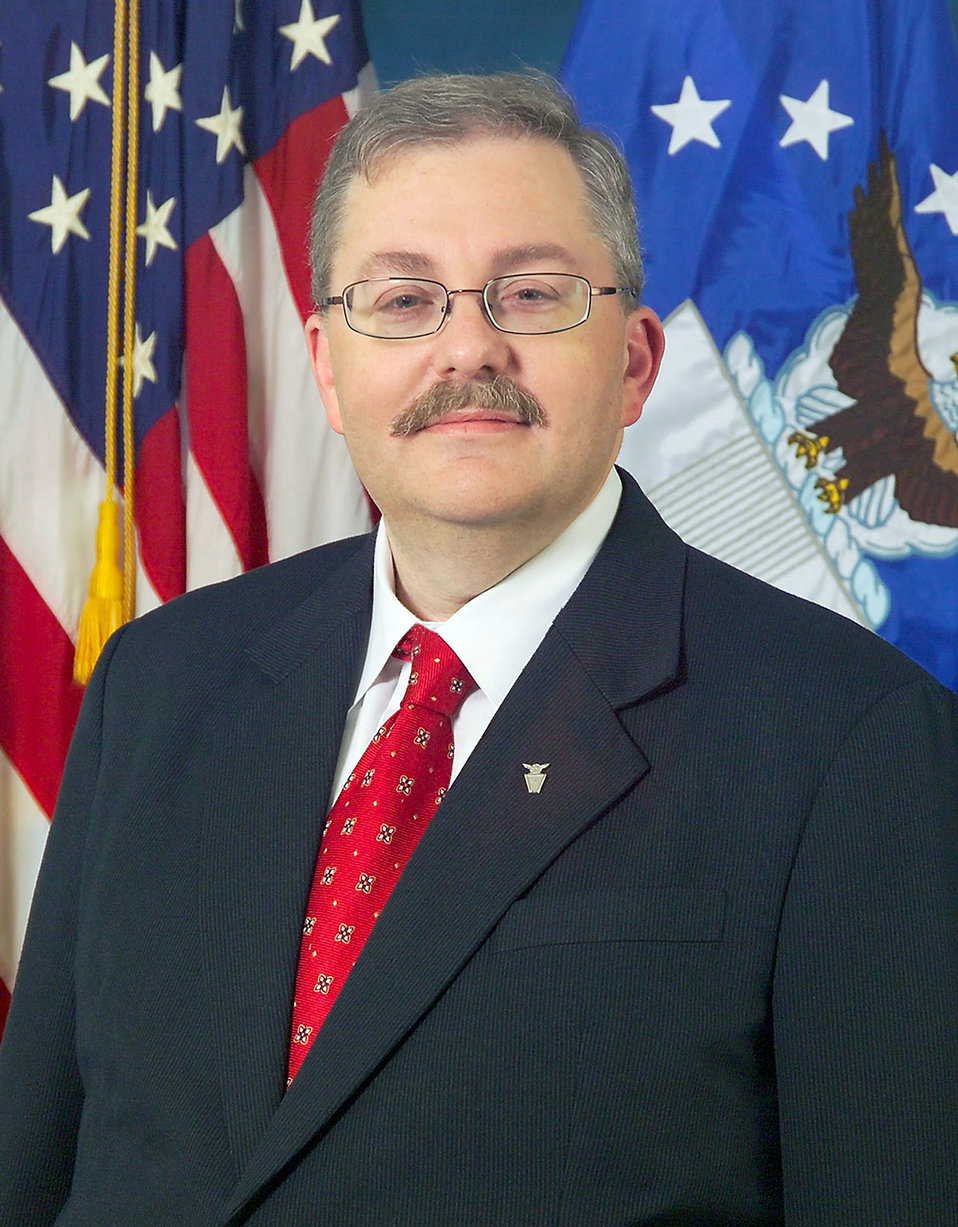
DOD turns to ESC to lead way on NextGen

Dr. Tim Rudolph, the Electronic Systems Center chief technology officer, has been named the Defense Department's chief architect for the Next Generation Air Transportation System.